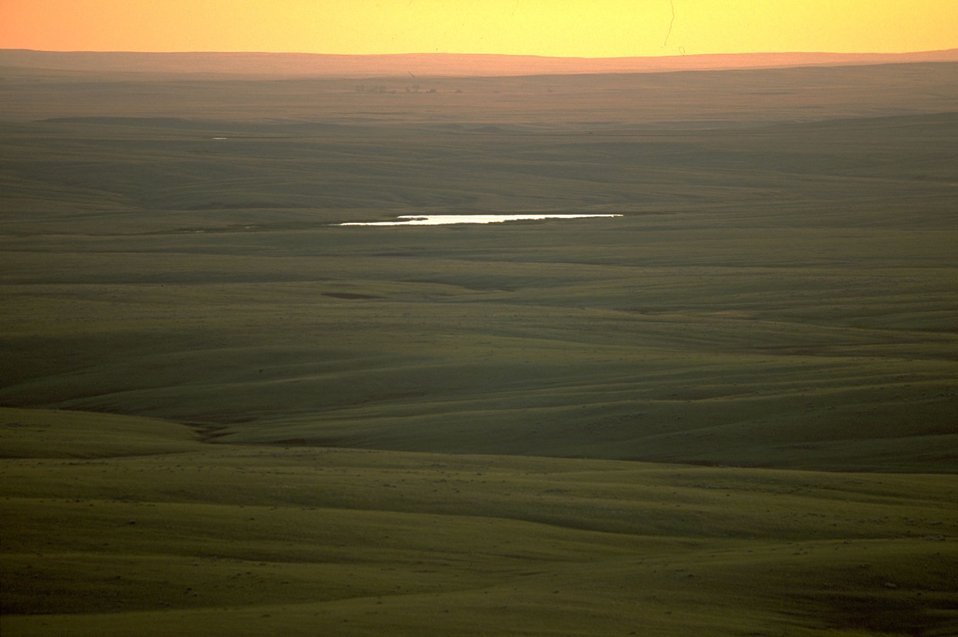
Grassland Vista with Reservoir 30 miles north of Belle Fourche